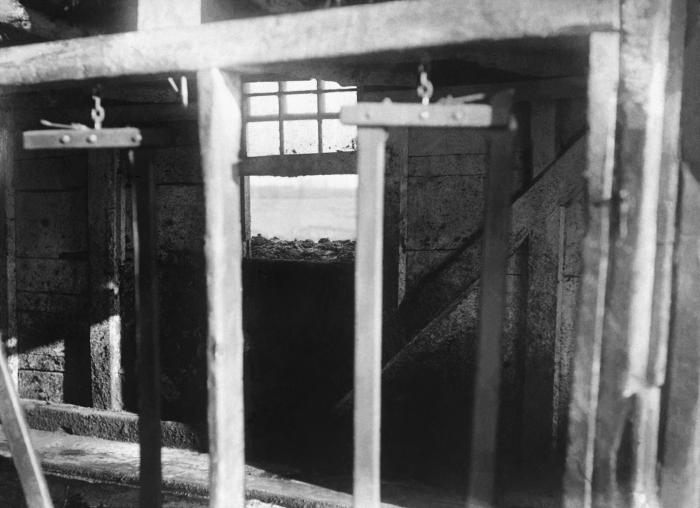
This historic 1926 photograph depicted the interior of an unsanitary barn that might have typically been found in rural Minnesota. This study focused on the causes of mastitis in cows, which was a public health concern, due to the fact that mastitis can increase levels of harmful bacteria in milk supplies.